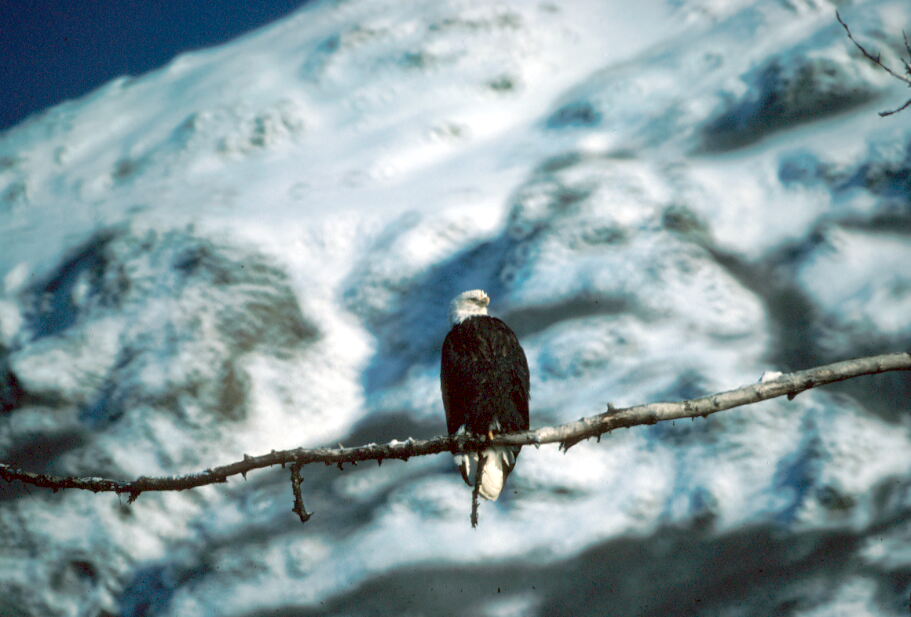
Bald Eagle.